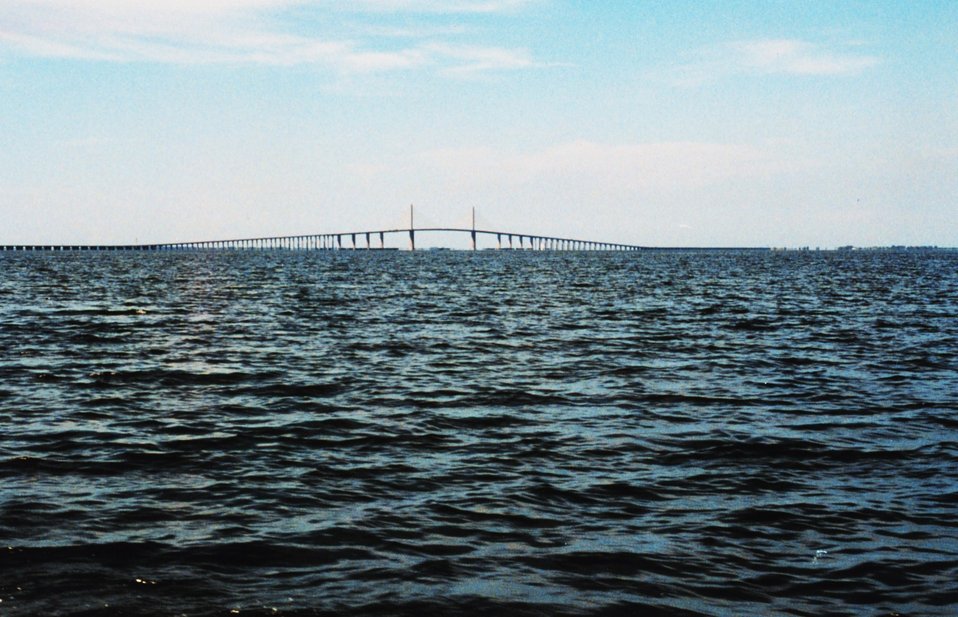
The Sunshine Skyway Bridge